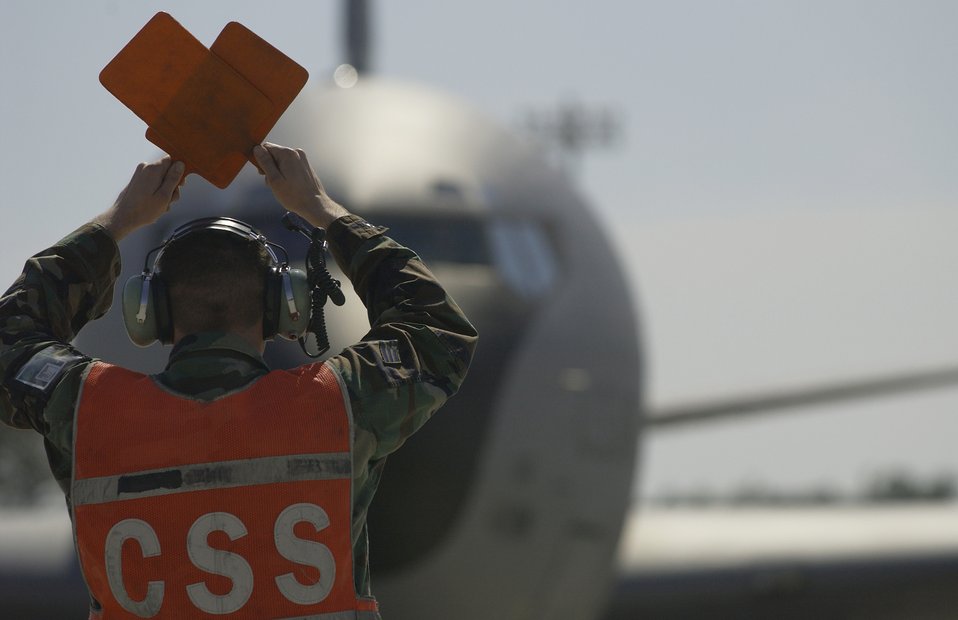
Tanker marshal

POPE AIR FORCE BASE, N.C. -- Senior Airman Roger McAtee marshals in a KC-135 Stratotanker to its parking spot after landing here April 5 during the joint forcible entry exercise. The joint airdrop exercise is designed to enhance service cohesiveness between the U.S. Army and Air Force giving both services an opportunity to properly execute large-scale heavy equipment and troop movement. Airman McAtee is a crew chief with the 743rd Aircraft Maintenance Squadron.